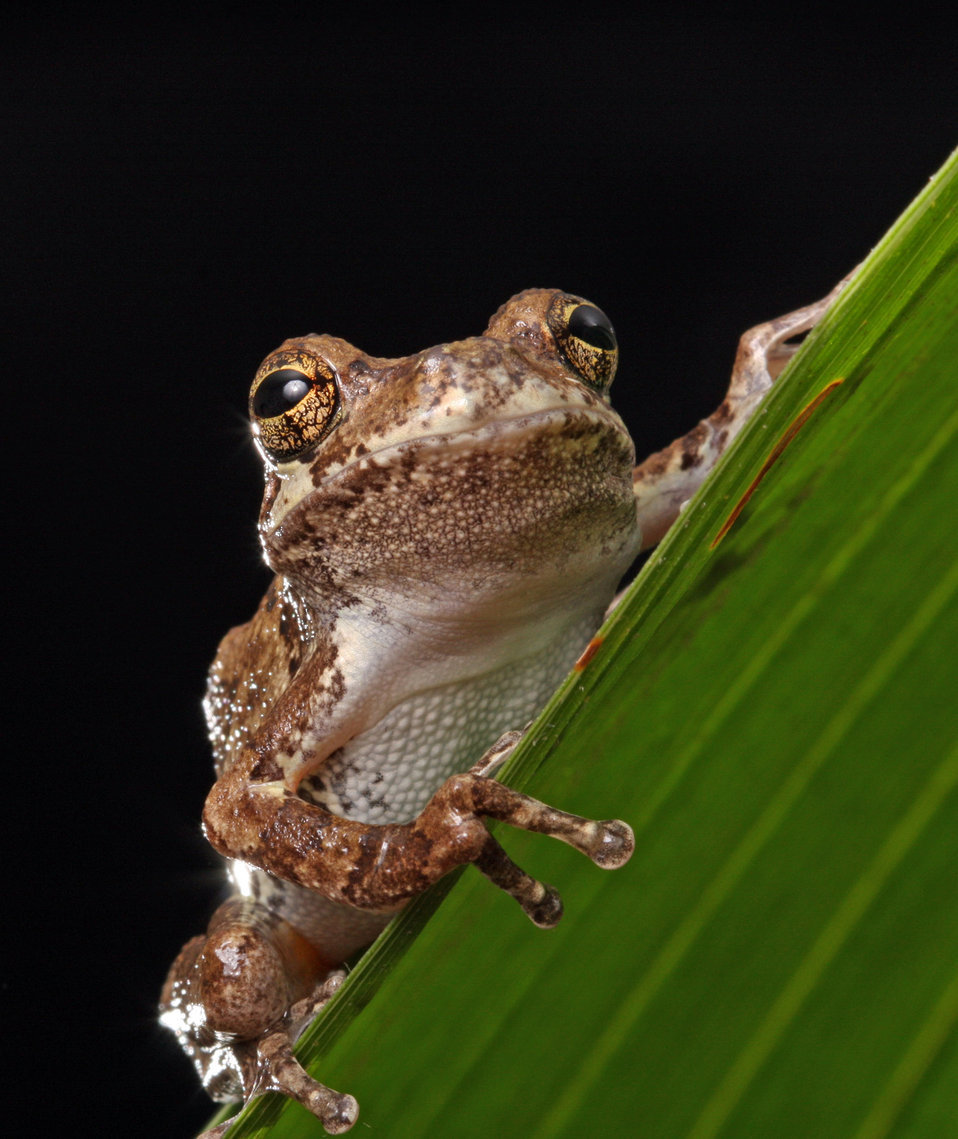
Frog macro portrait

Close-up macro portrait of a gray tree frog.